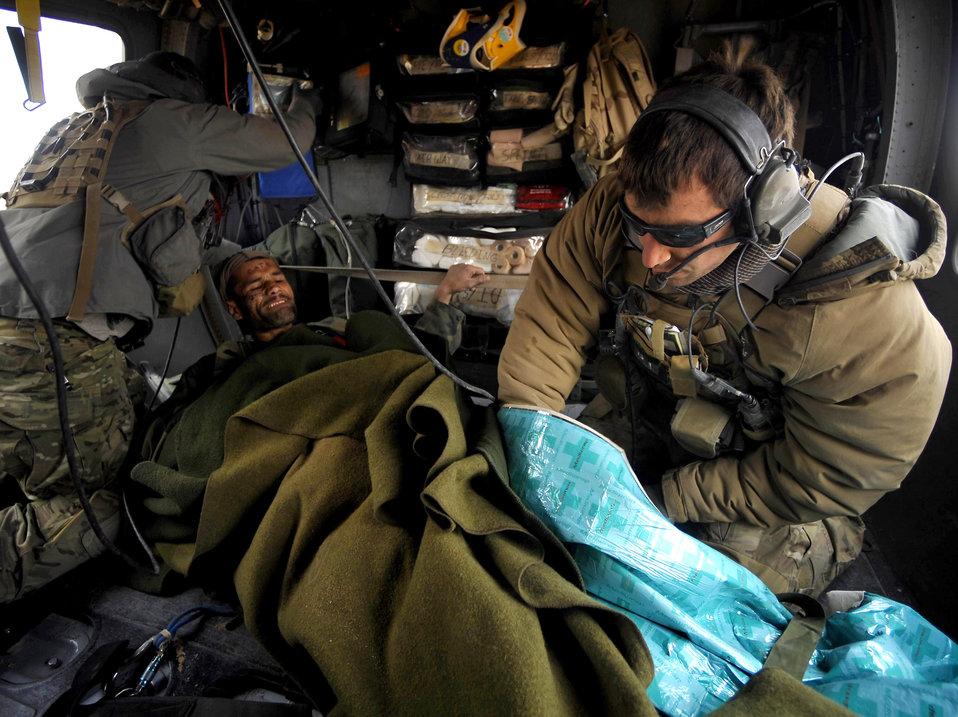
Pararescuemen provide medical attention to an Afghan who has suffered gunshot injuries

U.S. Air Force Pararescuemen from the 66th Expeditionary Rescue Squadron deployed to Camp Bastion, Afghanistan, provide medical attention to an Afghan who has suffered gunshot injuries, Dec. 08, 2009. The PJs are able to rescue patients in any situation who need medical attention.